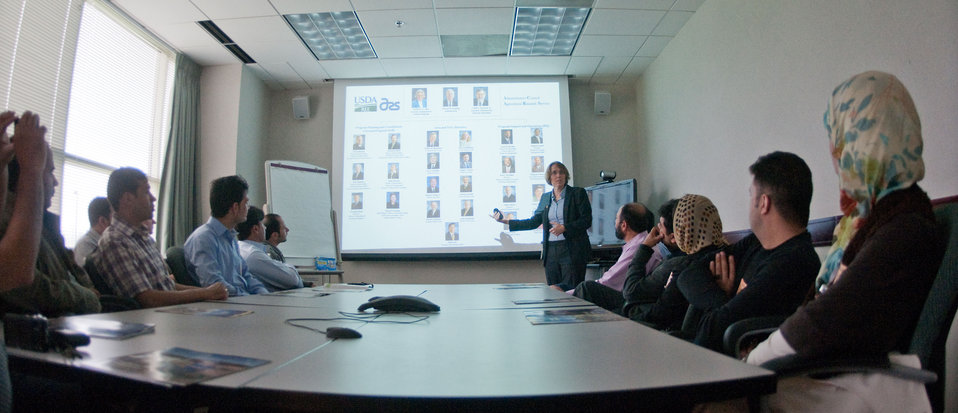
U.S. Department of Agriculture (USDA), Agriculture Research Service (ARS), International Research Program's Jennifer Woodward-Greene, spoke about the organization of USDA and ARS with the Afghan Ministry of Agriculture's Borlaug Fellows at the George Washington Carver Center, in Beltsville, MD on Wednesday Sept. 21, 2011.